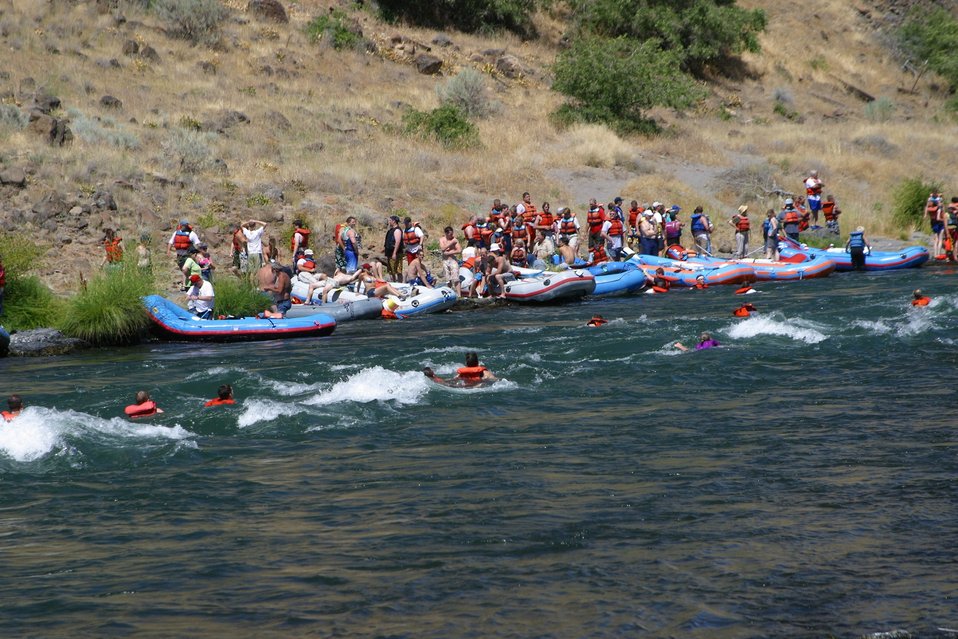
Elevator Rapids near Mile 46 on the Lower Deshcutes River. 7/26/03 Pelton Dam 3600 cfs: Moody Rapids 4300 cfs.